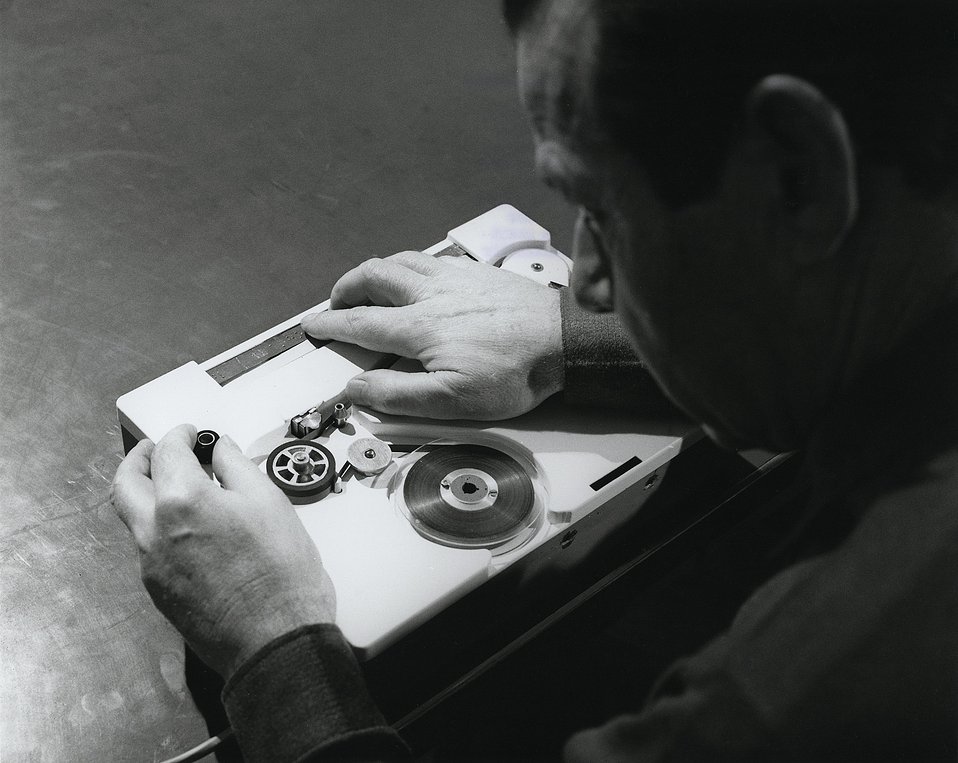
Prototype model of new instrument that will reproduce symbols in the braille alphabet that have been recorded on ordinary magnetic tape.
c.1969